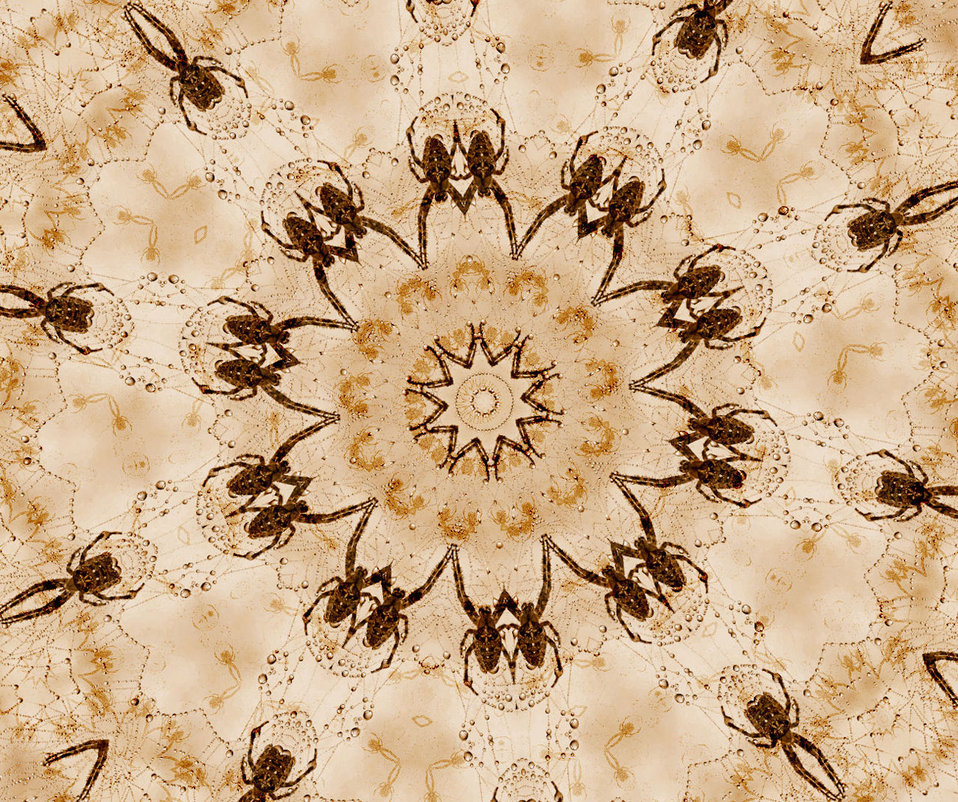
Spidey

Spiders in orbits.